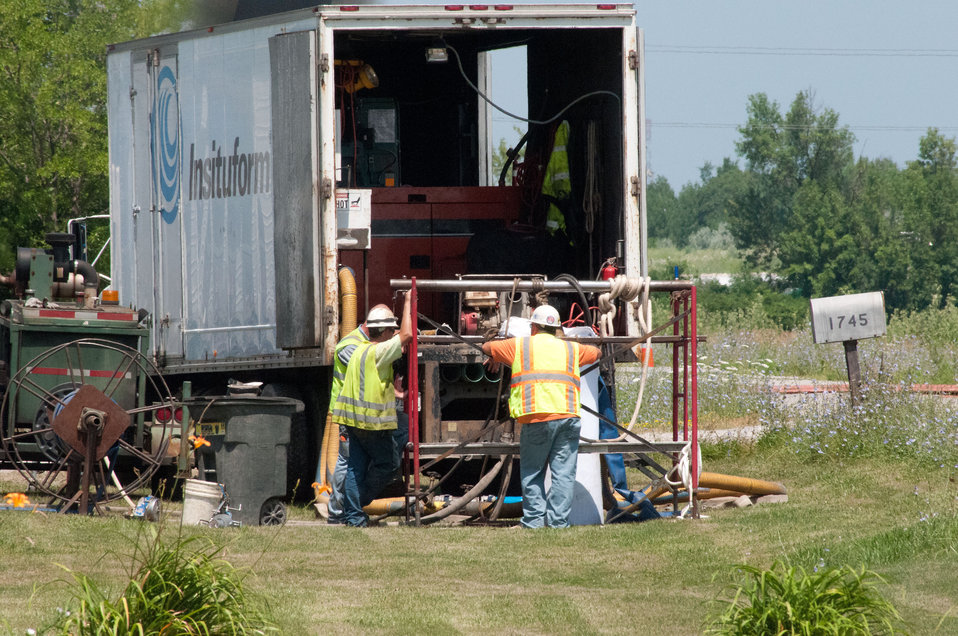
Gardens and roadways did not have to be dug up for the Buena Vista Township Phase II Sewer Project, in Michigan, where the United States Department of Agriculture funded the refurbishment and rehabilitation of 45,500 linear feet of defective sewer pipe, and more than 200 manholes; on Tuesday, July 19, 2011. The project includes the construction of an off-site excess flow basin; construction of a pump station; and improvements at the wastewater treatment plant. The system will serve 2,349 residential and 177 commercial customers and will bring the township into compliance with environmental regulations regarding pollutant discharges.
Inspections revealed that the 1960s sanitary sewer system had inflow from storm and rainwater systems and overflowed into the sanitary sewer system. Infiltration was found in the form of cracks, and other failures that allowed groundwater to enter. Rather than digging up the old system, rehabilitation with a cured-in-place-pipe (CIPP) method was chosen. This provides up to a 50% savings and the liner is projected to last 50-100 years. CIPP repair of the 8-30” diameter pipes involves pulling a resin-saturated fabric liner through a damaged pipe, which is then cured with steam or hot water to form a tight-fitting, joint less replacement pipe. Trenchless repair methods require less digging than traditional “dig and replace” repair methods and minimize damage to yards and landscaping. There are two of these teams and one manhole rehabilitation to seal the underground casting frame or brick structure. They process 600-800 feet per day.
Wade Trim Inc. Professional Engineer Tiffany Harrison said about working with the United States Department of Agriculture’s Rural Development “It was very easy, they make it very straight forward, in what paperwork they need. They were always available for questions.
USDA Rural Development has funded water and sewer projects in 117 Michigan communities serving more than 94,000 customers.
Senior Advisor to the Secretary of Agriculture Doug O’Brien said, “America will win the future by out-building, out-educating and out-innovating the world,” O'Brien said. “The Obama Administration is committed to the residents and business owners of Buena Vista Township in building the infrastructure needed to protect our environment and ensure clean water for future generations.” Being almost entirely surrounded by the Great Lakes, Michigan residents know that a small problem upstream usually leads to much bigger problems downstream and that the impact of water pollution extends far beyond the immediate community.